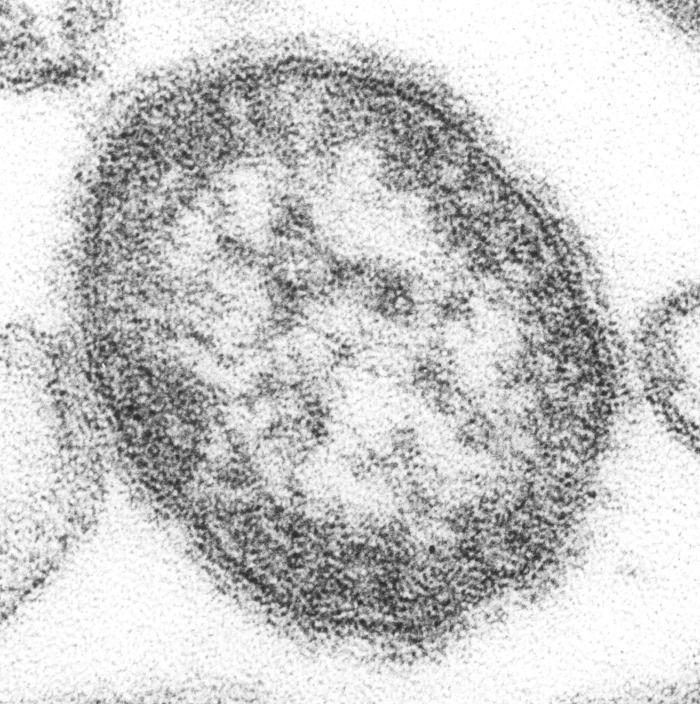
This thin-section transmission electron micrograph (TEM) revealed the ultrastructural appearance of a single virus particle, or 'virion', of measles virus. The measles virus is a paramyxovirus, of the genus Morbillivirus. It is 100-200 nm in diameter, with a core of single-stranded RNA, and is closely related to the Rinderpest and canine distemper viruses. Two membrane envelope proteins are important in pathogenesis. They are the F (fusion) protein, which is responsible for fusion of virus and host cell membranes, viral penetration, and hemolysis, and the H (hemagglutinin) protein, which is responsible for adsorption of virus to cells.There is only one antigenic type of measles virus. Although studies have documented changes in the H glycoprotein, these changes do not appear to be epidemiologically important (i.e., no change in vaccine efficacy has been observed). See PHIL 10707 for a colorized version of this image.